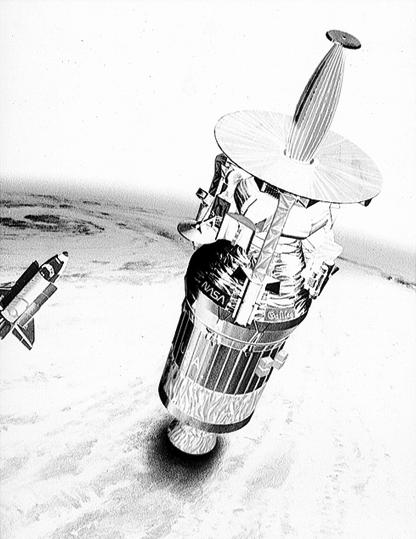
NASA'S GALILEO SPACECRAFT, POWERED DOE MANUFACTURED THERMOELECTRIC GENERATORS.

TWO RADIOISOTOPE THERMOELECTRIC GENERATORS (RTGS) MANUFACTURED BY DOE HAVE PROVIDED ELECTRICAL POWER TO NASA'S GALILEO SPACECRAFT SINCE 1990. RTGS PROVIDE MORE POWER THROUGH THE RADIOACTIVE DECAY OF PLUTONIUM-238, A NON-WEAPONS GRADE ISOTOPE. AS RADIOACTIVE ISOTOPES DECAY, THEY GIVE OFF HEAT THAT CAN BE CONVERTED INTO ELECTRICITY. DOE SUPPLIED GENERATORS AND HEATERS HAVE PROVIDED POWER FOR U.S. SPACECRAFT SINCE 1961.